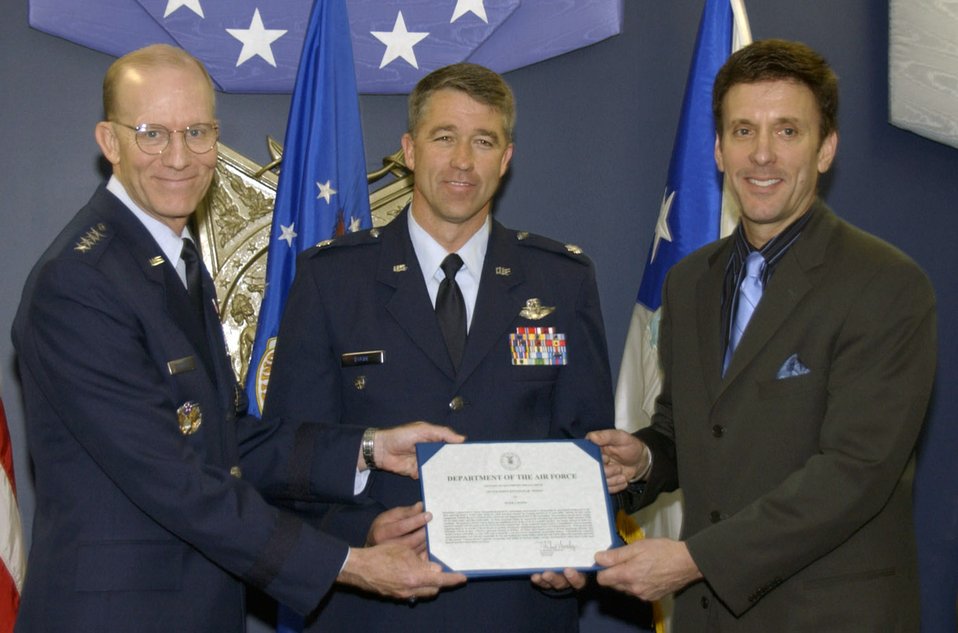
F-16 pilot earns Koren Kolligian Jr. Trophy

Air Force Vice Chief of Staff Gen. John D.W. Corley (left) and Koren Kolligian (right) present the Koren Kolligian Jr. Trophy to Lt. Col. Peter Byrne during a ceremony in the Pentagon June 5. The trophy, an Air Force safety award, is named after 1st Lt. Koren Kolligian Jr., whose T-33 Shooting Star went missing off the California coast in 1955. The trophy is given annually to aircrew members who exhibit